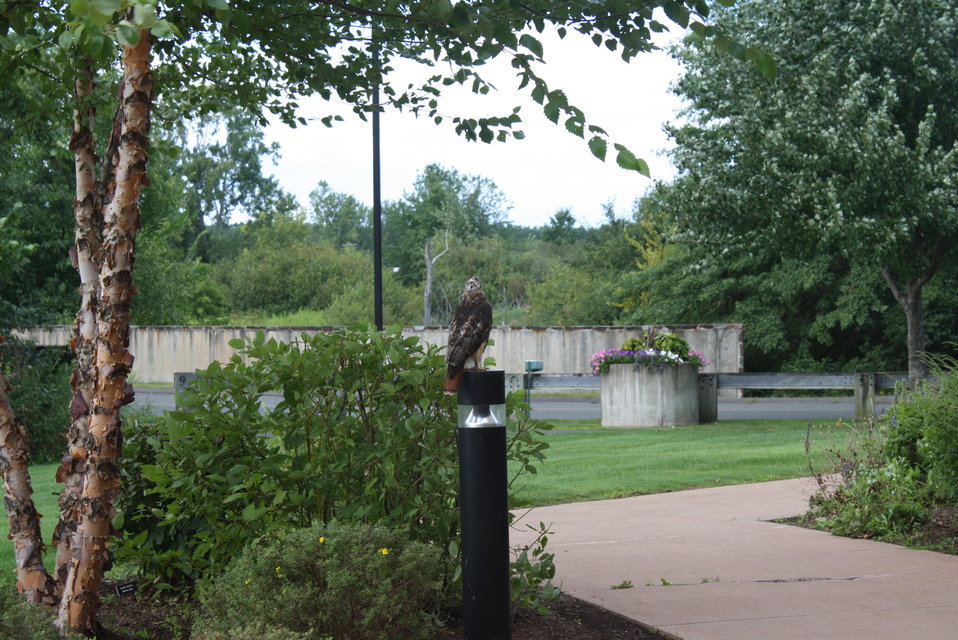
Red-tailed Hawk on light post

Hawk outside of the U.S. Fish and Wildlife Service Northeast Regional Office, August 14 2013 on top of a light post.